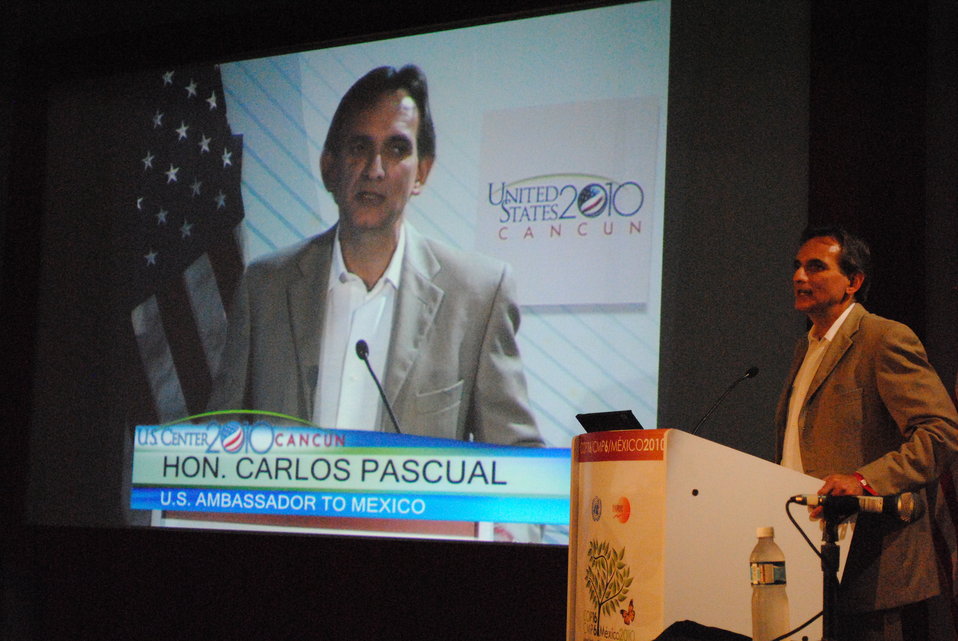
Ambassador Pascual Introduces Secretary Chu

U.S. Ambassador to Mexico Carlos Pascual introduces U.S. Secretary of Energy Steven Chu at the U.S. Center at COP-16 in Cancun, Mexico, on December 6, 2010.